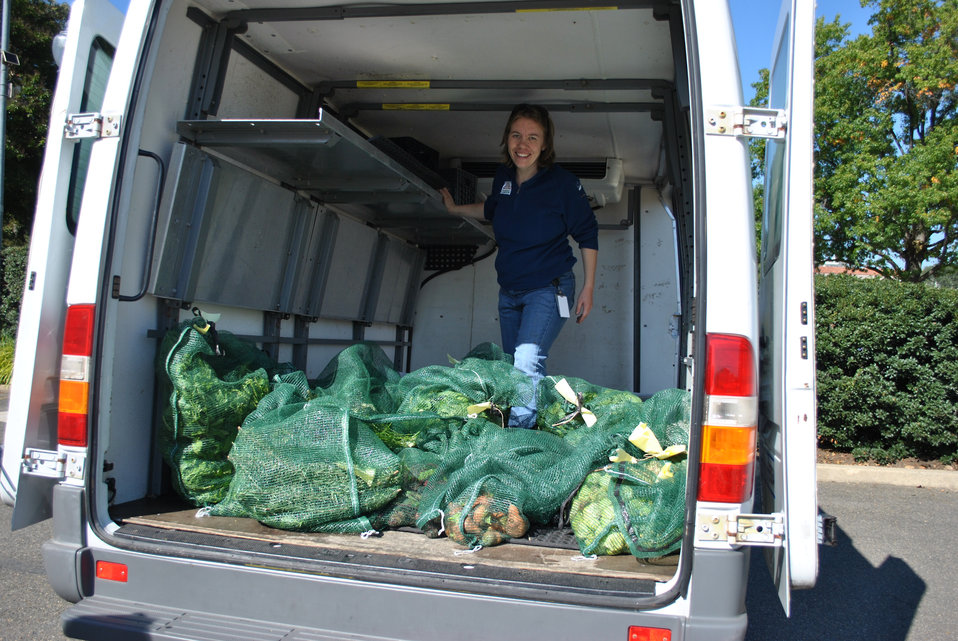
U.S. Department of Agriculture (USDA) National Agricultural Statistics Service (NASS) volunteer Lindsay Drunasky comes out every Tuesday at lunchtime to pick herbs, fruits and vegetables from USDA headquarters Peoples Garden in Washington, D.C. All food grown has been donated to DC Central Kitchen since 2009.